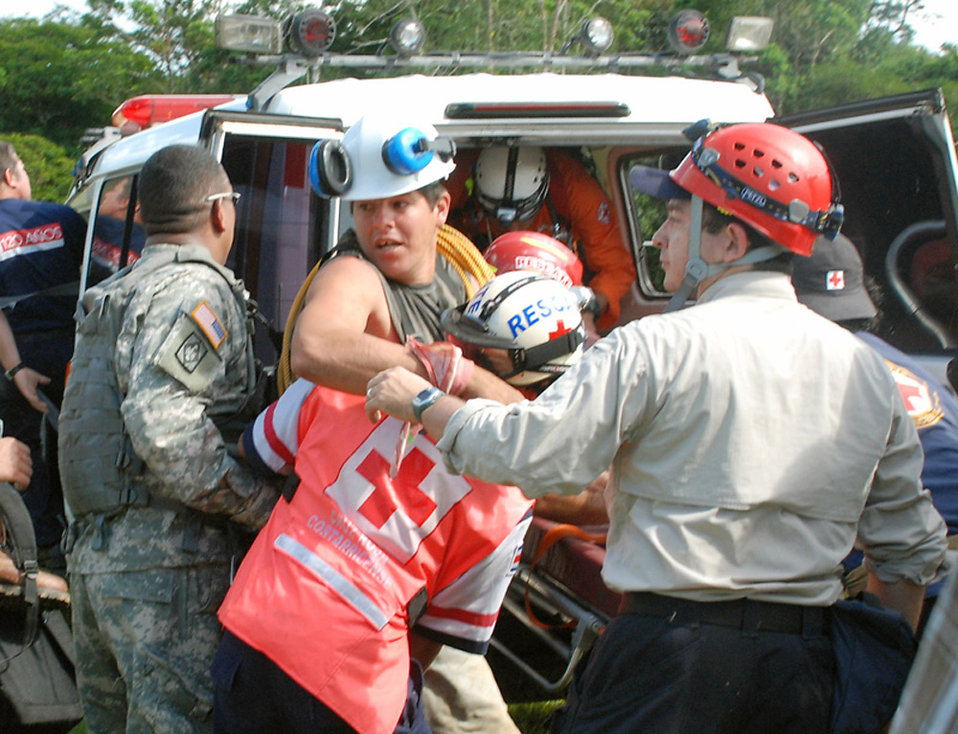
Servicemembers assist following earthquake in Costa Rica

Members of the Costa Rican Red Cross load an earthquake victim with a broken leg into an ambulance . 10 in San Miguel, Costa Rica. The man was rescued by Joint Task Force-Bravo members via an UH-60 Blackhawk. Four JTF-Bravo helicopters and 34 American servicemembers deployed here from Soto Cano Air Base, Honduras, at the request of the Costa Rican government in order to provide lifesaving support to those affected by the earthquake.